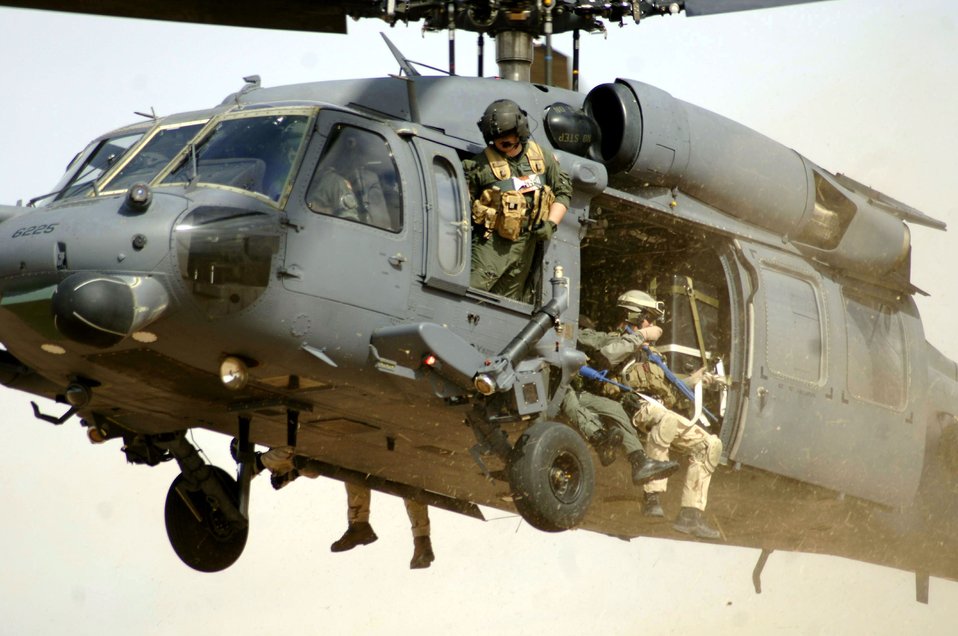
Joint exercise

DAVIS-MONTHAN AIR FORCE BASE, Ariz. (AFPN) -- Pararescuemen with the 48th Rescue Squadron and members of the Dutch Army prepare to land to search for casualties during a joint US - Dutch mass casualty exercise Feb. 14. The scenario involved a simulated shoot-down of a C-141 Starlifter cargo plane by a missile.